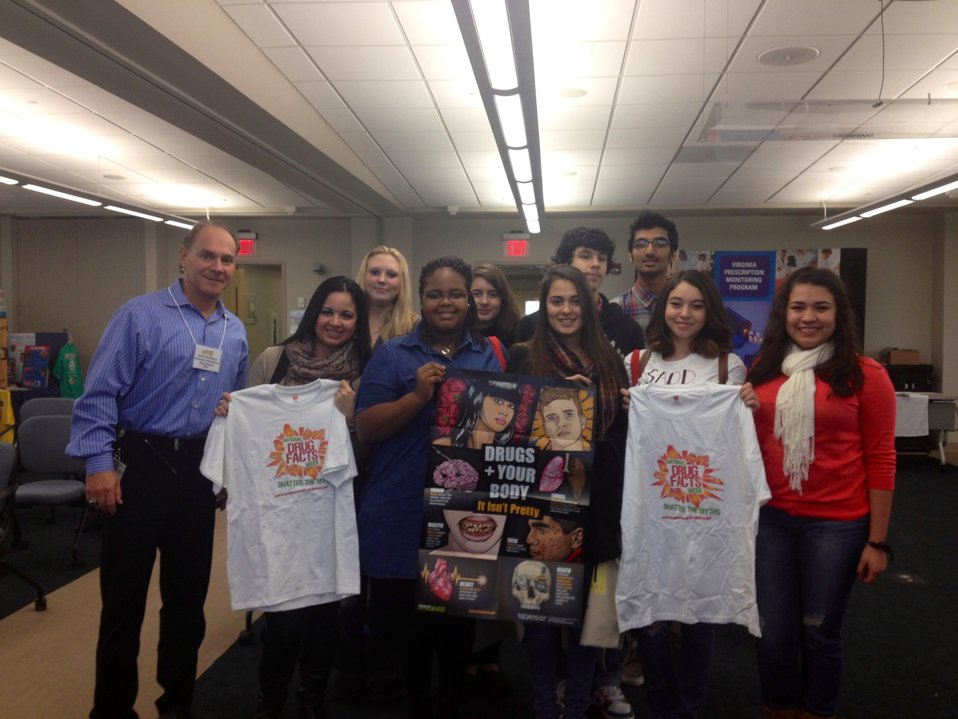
GarField High School SADD club